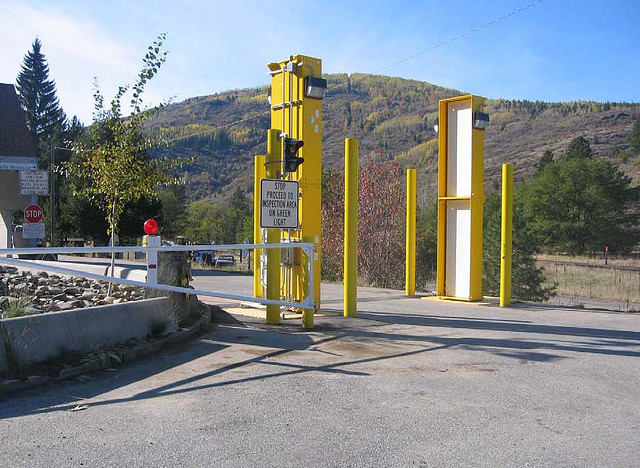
Radiation portal monitors are now installed at every port of entry along U.S. northern and southern borders. All vehicles and cargo entering the U.S. via the RPM's are scanned for radioactive materials.